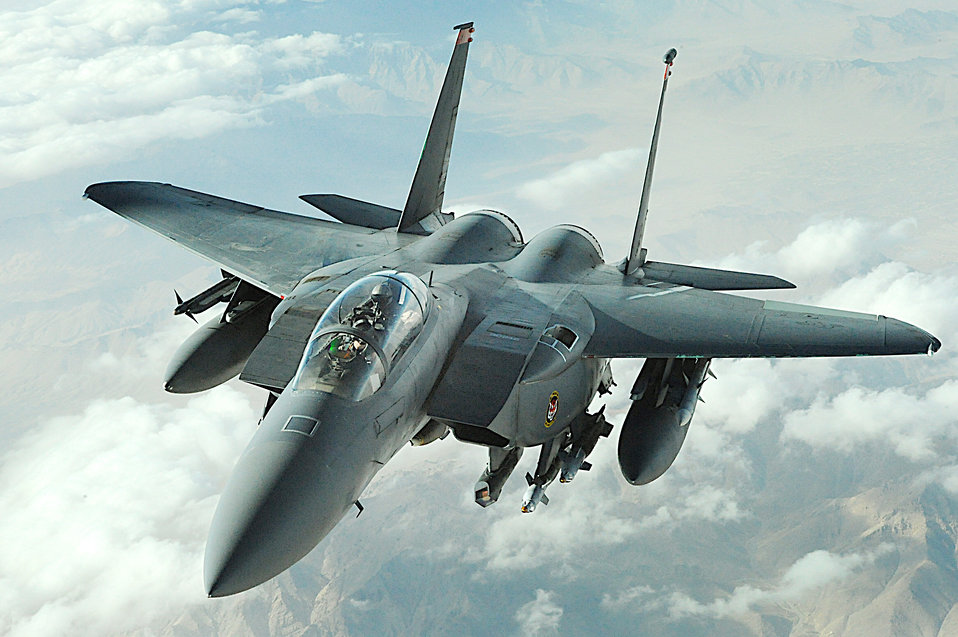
F-15E Strike Eagle provides armed overwatch

An F-15E Strike Eagle flies over Afghanistan. The F-15E's primary role in Afghanistan is providing close-air support for ground troops.